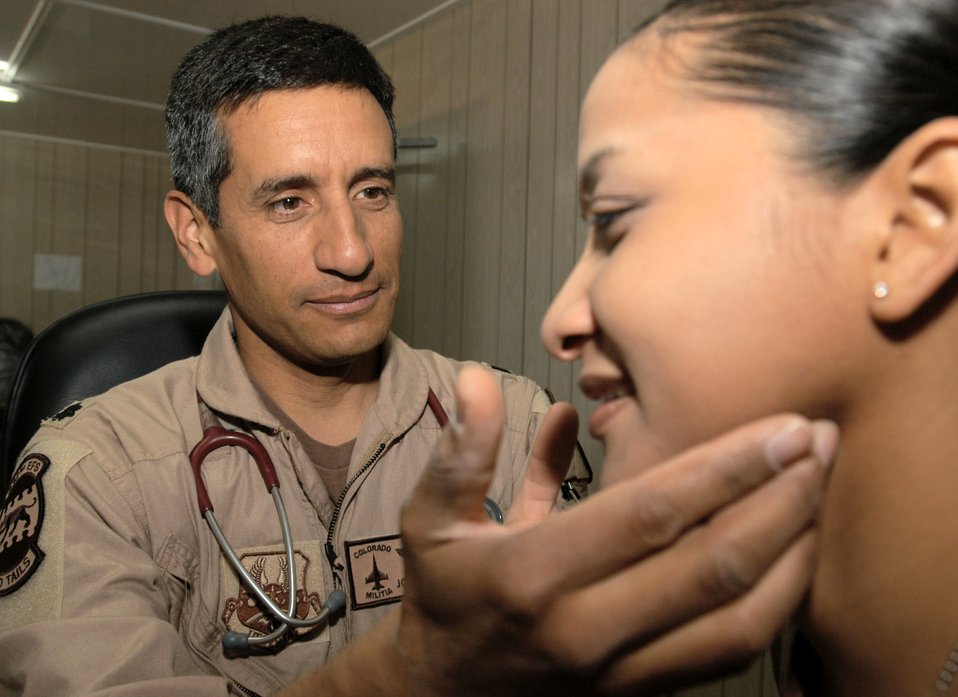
Check up

BALAD AIR BASE, Iraq -- Lt. Col. (Dr.) John Torres examines Senior Airman Melanie Leon Guerrero. Both are deployed here from Colorado Air National Guard's 140th Wing at Buckley Air Force Base.